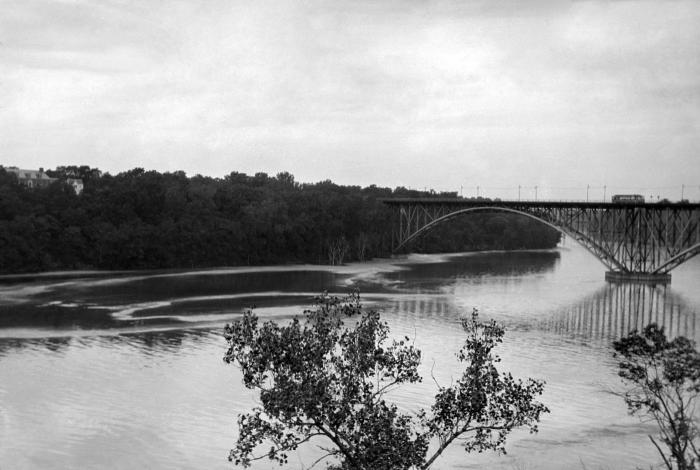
From its west bank, looking upstream toward the Lake St. Bridge, this historic photograph, taken on June 21, 1929, showed the Mississippi River as it passed through Minneapolis, Minnesota.